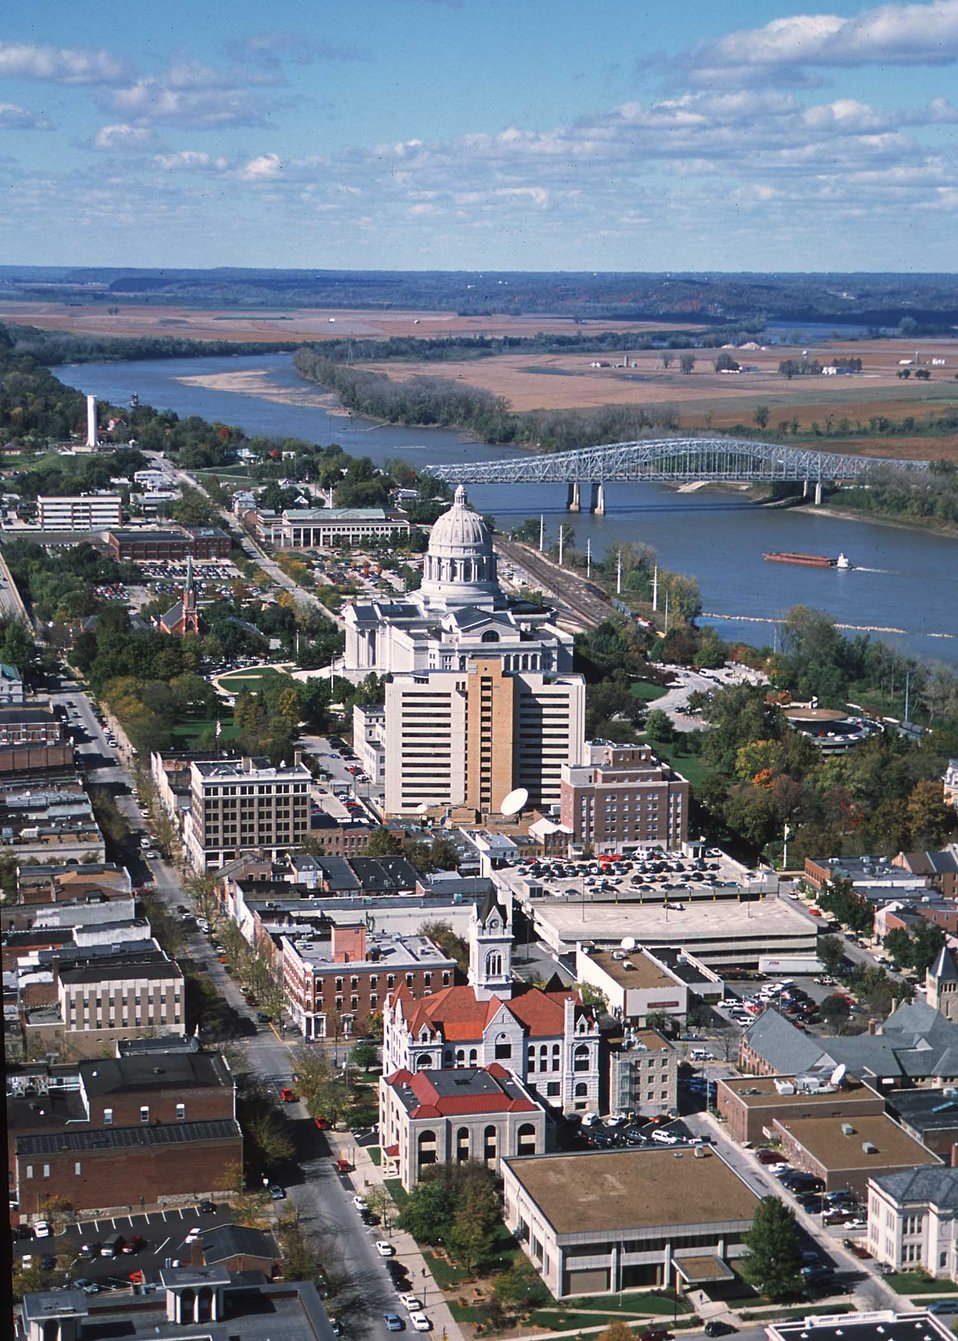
The Missouri River separates agriculture from the city life as it flows past the Missouri State Capitol in Jefferson City.